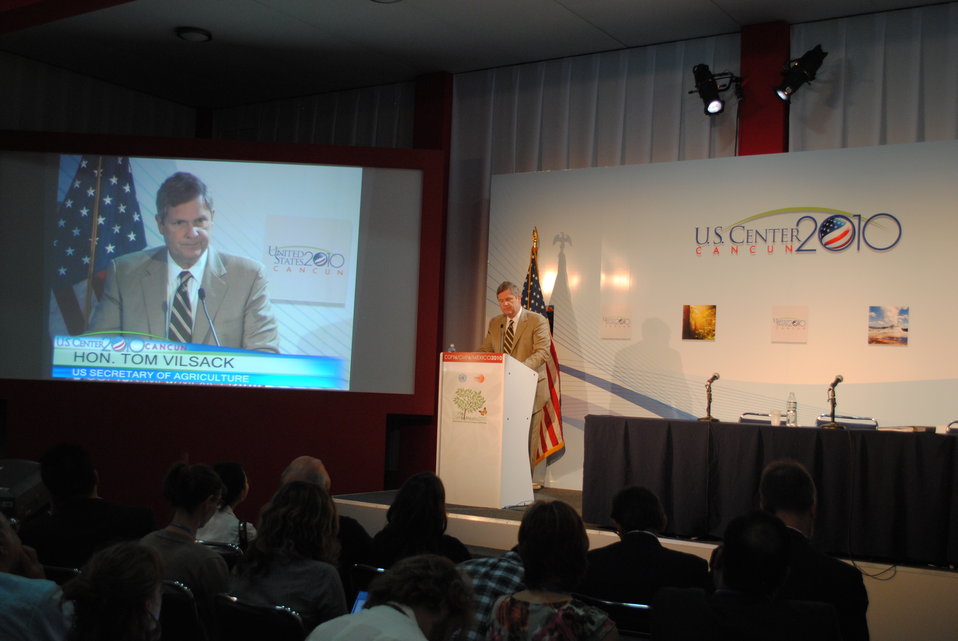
Secretary Vilsack Describes How the USDA Is Addressing Climate Change

U.S. Secretary of Agriculture Tom Vilsack describes how the U.S. Department of Agriculture is taking actions to meet the challenge of climate change at the U.S. Center at COP-16 in Cancun, Mexico, on December 9, 2010.